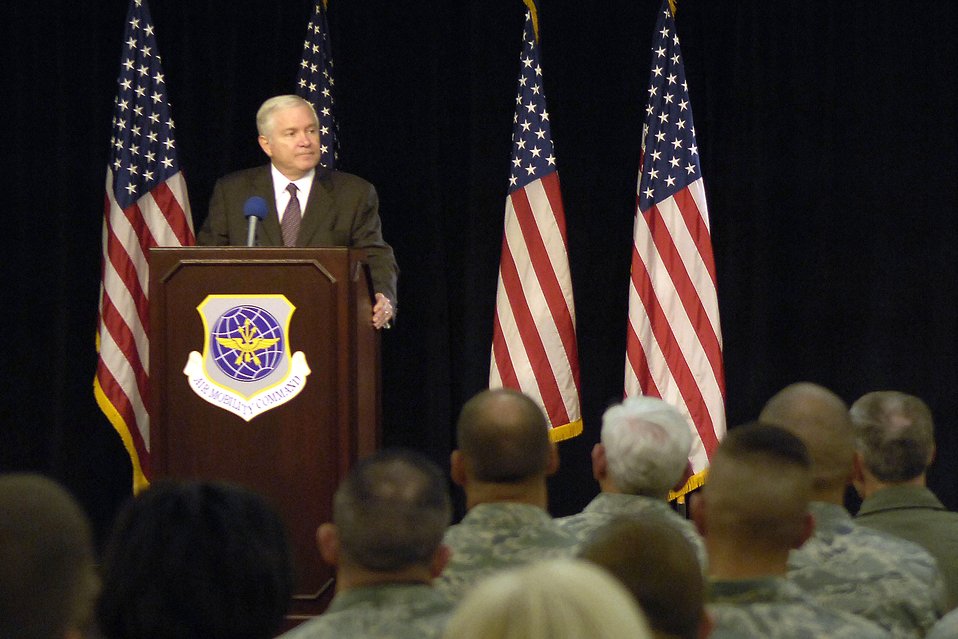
Gates hammers home importance of Air Force nuke mission

Defense Secretary Robert M. Gates talks to Air Mobility Command Airmen June 10 at Scott Air Force Base, Ill. Secretary Gates reassured to the Airmen that they are the premier Air Force in the world and discussed the recent resignations of top Air Force officials.